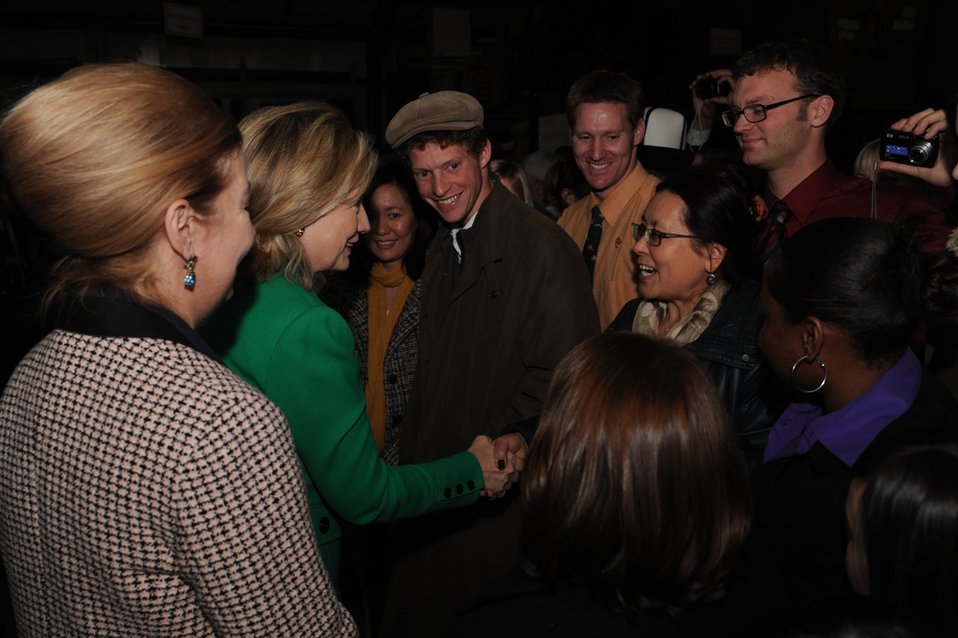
Secretary Clinton Is Greeted By U.S. Embassy Bishkek Staff

U.S. Secretary of State Hillary Rodham Clinton is greeted by U.S. Embassy Bishkek staff in Bishkek, Kyrgyzstan, on December 2, 2010.